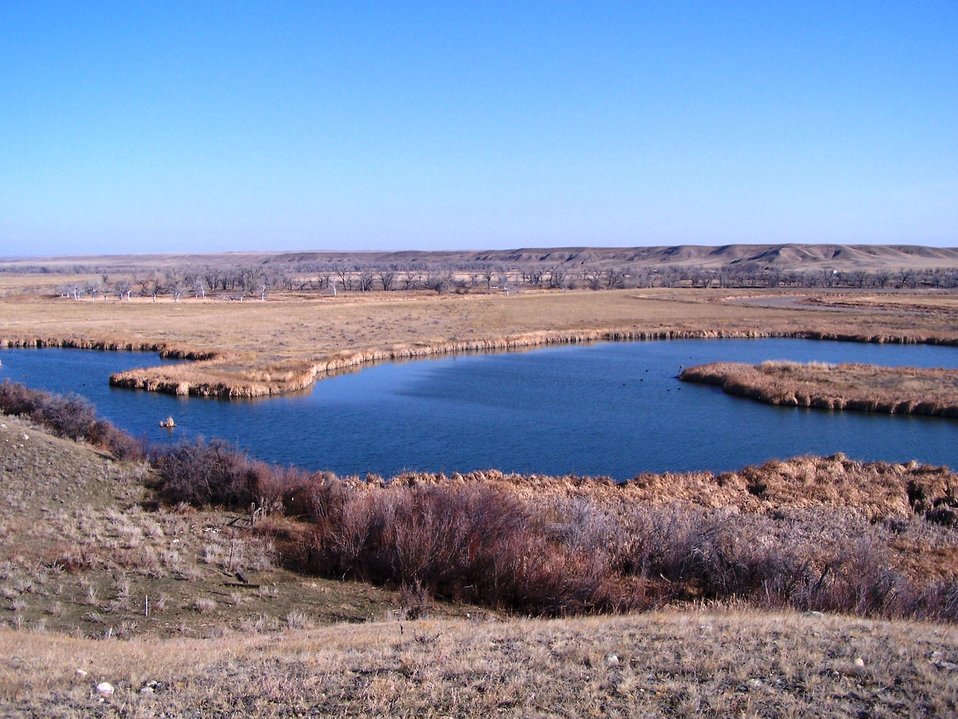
McNeil Slough WPA

Wetlands on McNeil slough Waterfowl Production Area